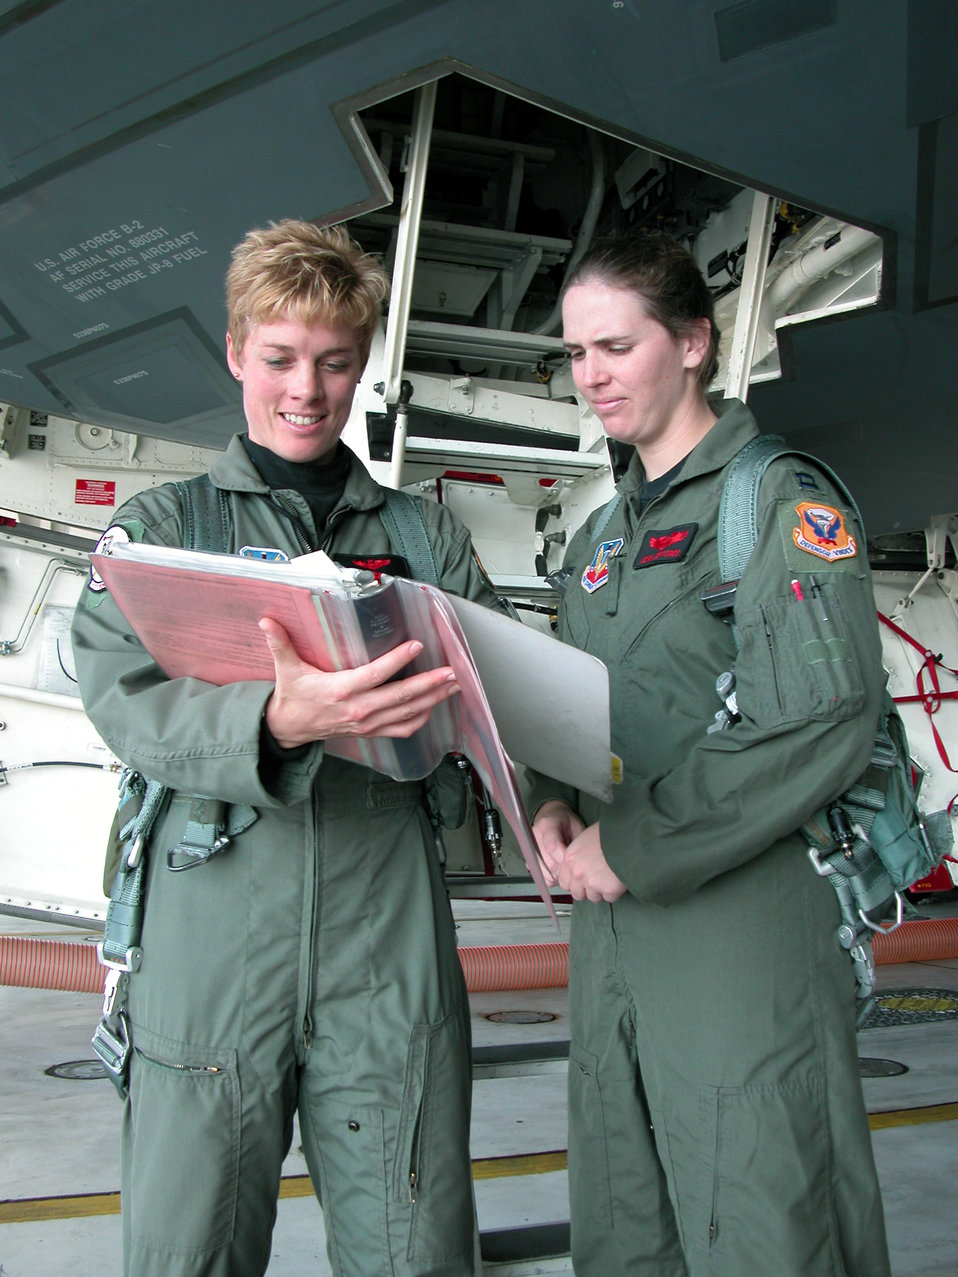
First 'unmanned' B-2 takes flight

WHITEMAN AIR FORCE BASE, Mo. -- Maj. Kristin Goodwin and Capt. Jenn Jeffords review checklists before a B-2 Spirit bomber mission Oct. 18. Flying the Spirit of Mississippi, they practiced conventional bombing and refueled with a KC-135 Stratotanker from Altus Air Force Base, Okla. The Airmen are assigned to the 325th Bomb Squadron here. Major Goodwin has been a B-2 pilot since May 2002; Captain Jeffords became B-2-certified in August.